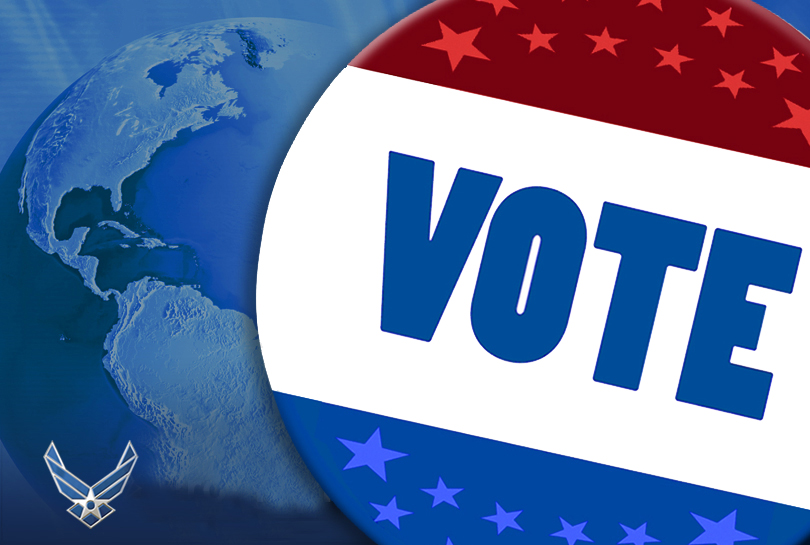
Voting